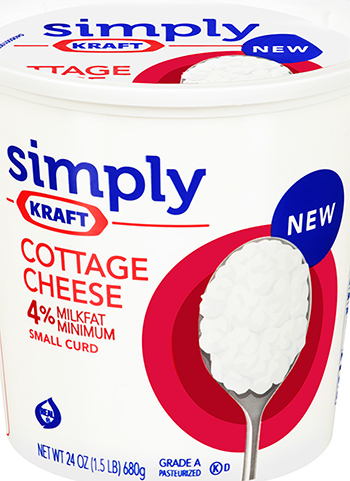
RECALLED – Cottage Cheese products

May 17, 2014 – Product Recall – Kraft Foods Group Voluntarily Recalls Select Cottage Cheese Products Due to Out-of-Standard Storage Temperatures
Certain Knudsen Cottage Cheese, Breakstone’s Cottage Cheese, Simply Kraft Cottage Cheese and Daily Chef Cottage Cheese Products Included in the Recall
.